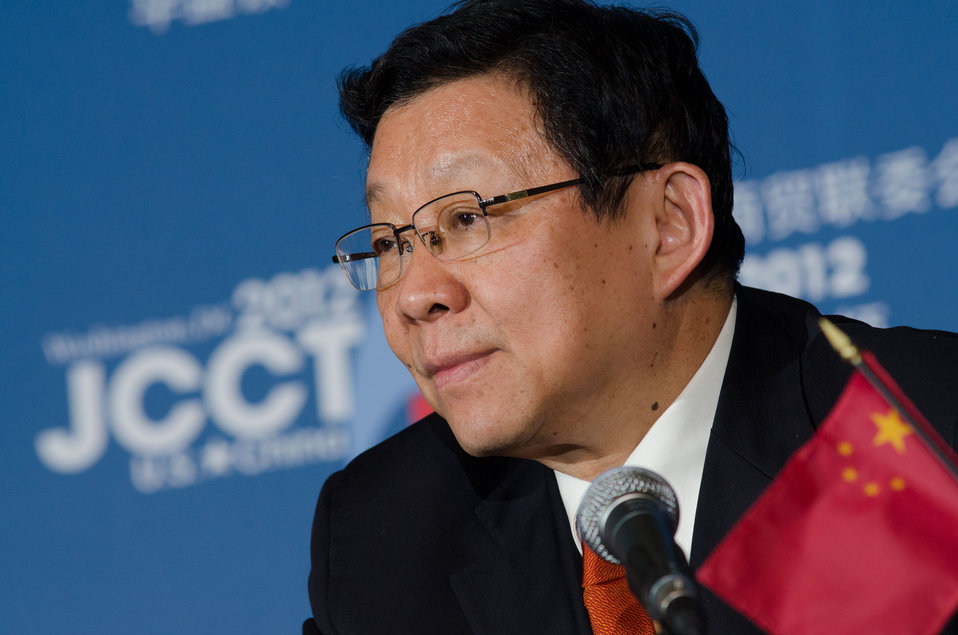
China's Minister of Commerce Chen Deming listens to a question from international news media journalists at the 23rd Session of the U.S. China Joint Commission on Commerce and Trade (JCCT) press conference at the Andrew W. Mellon Auditorium in Washington, D.C. on Wednesday, Dec. 19, 2012. The JCCT holds high-level plenary meetings on an annual basis to review progress made by working groups that focus on a wide variety of trade issues. These working groups meet throughout the year to address topics such as intellectual property rights, agriculture, pharmaceuticals and medical devices, information technology, tourism, commercial law, environment, and statistics.